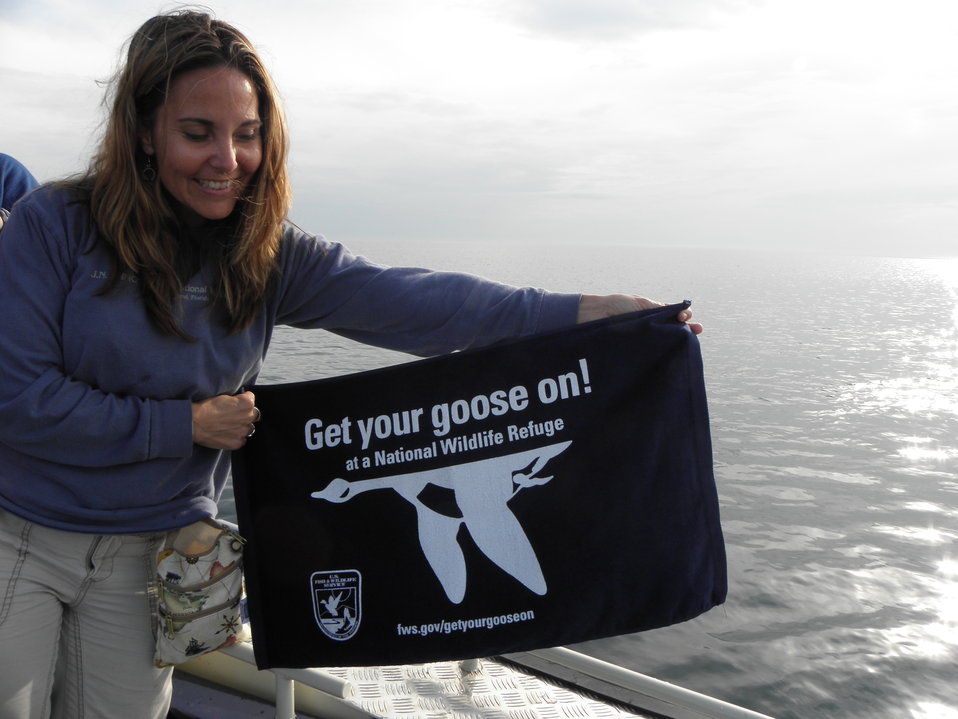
Get Your Goose On! - Russia Style

Taken at Lake Baikal during a USFWS trip to Russia.